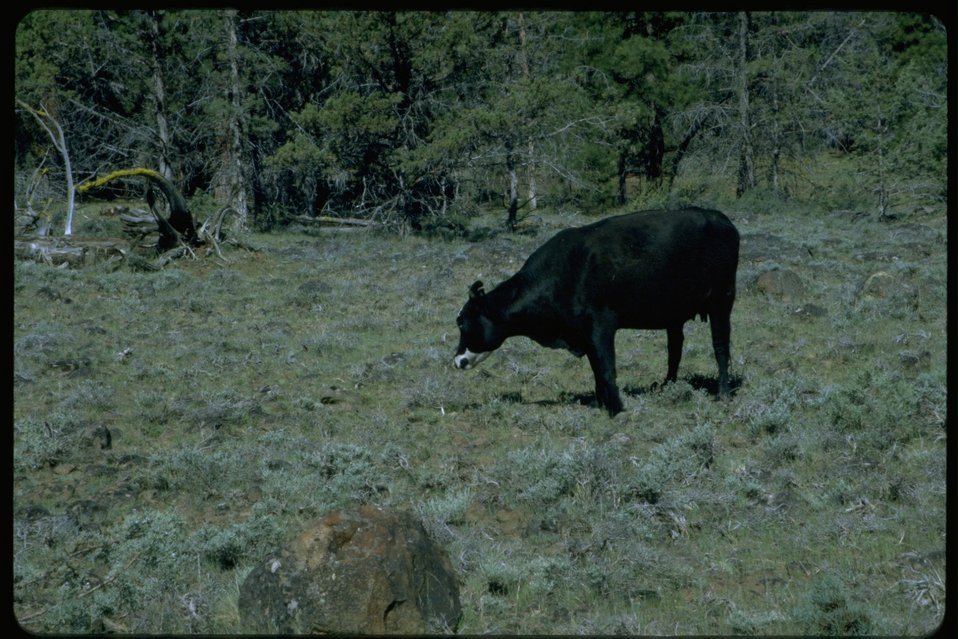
Cattle grazing.